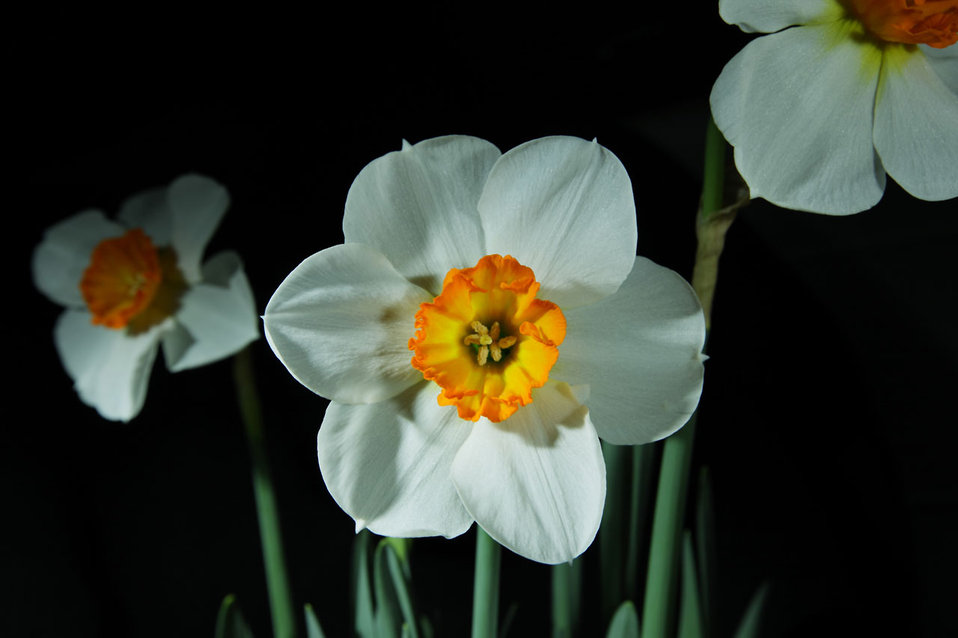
White daffodil flowers on black.